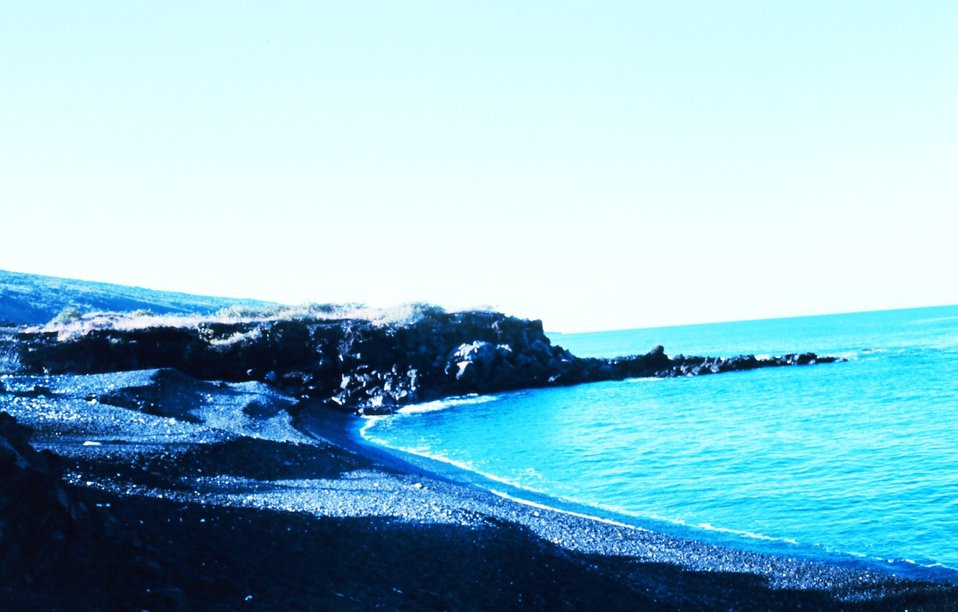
An arcuate cobble beach with a small volcanic rock outcrop at the end of the beach.